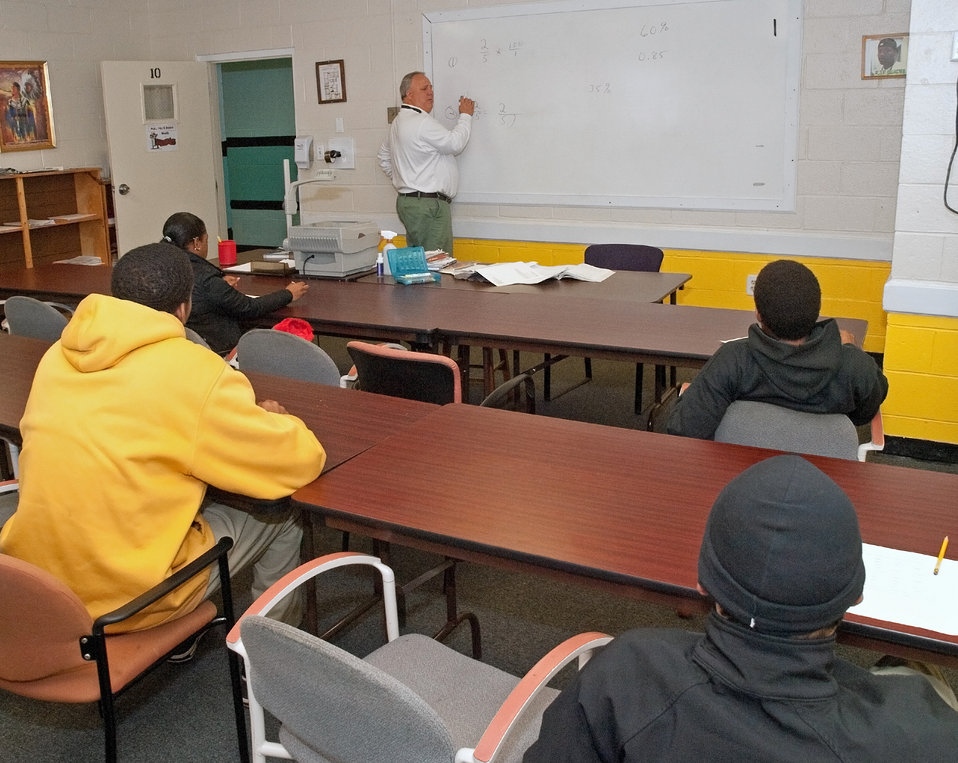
Instructor Ronald McClure teaches a class oat the Job Civilian Conservation Corp Center (JCCCC) in Harpers Ferry, WV on Nov. 8, 2012. The U.S. Forest Service manages 28 Job Corps Civilian Conservation Centers.